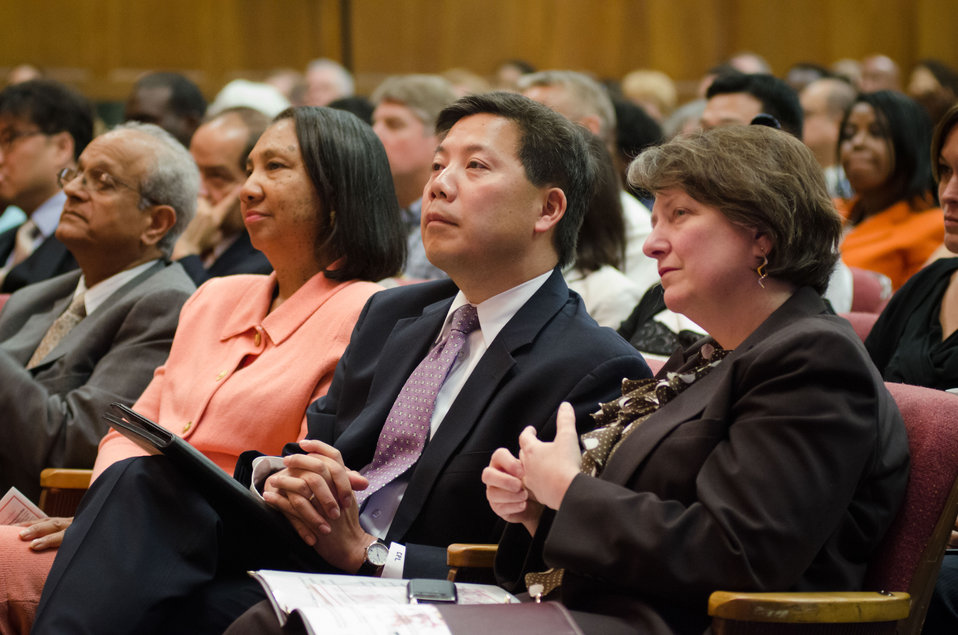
(L to R) Agriculture National Institute of Food and Agriculture Director Dr. Sonny Ramaswamy, Agriculture Associate Assistant Secretary for Administration Dr. Alma Hobbs, Assistant to the President and Cabinet Secretary The White House Chris Lu, and Agriculture Deputy Secretary Kathleen Merrigan listen to speakers at the 2012 Asian Pacific American Heritage Observance “Striving for Excellence in Leadership, Diversity and Inclusion” at the U.S. Department of Agriculture in Washington, D.C. on Thursday, May 24, 2012.